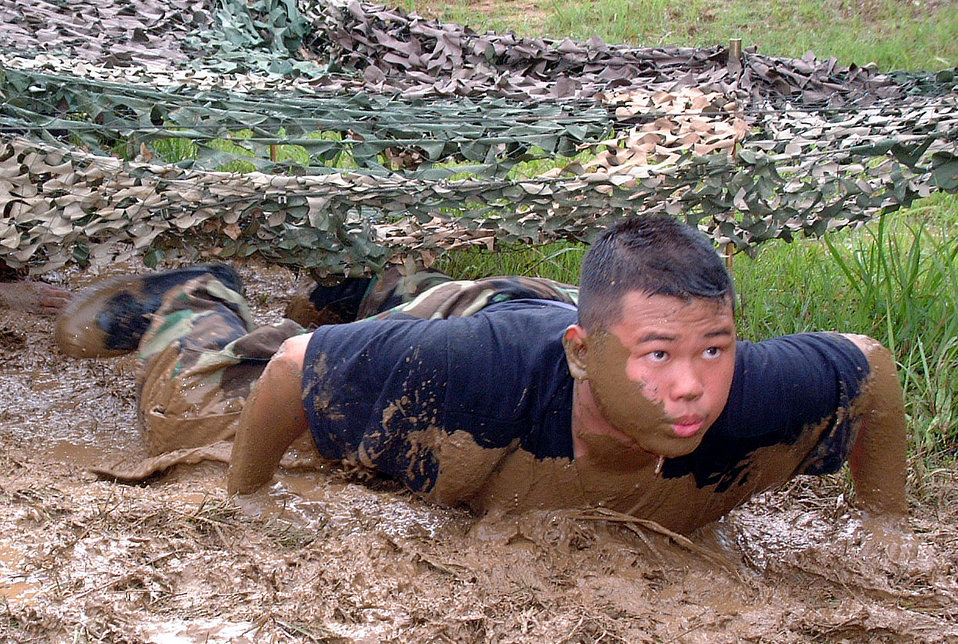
Mr. Mud

OKINAWA, Japan -- Junior ROTC Cadet Mike Arnado crawls under camouflage nets during a trip through the confidence course at the jungle-training center here June 19. Nearly 100 cadets from here and Korea crawled, jumped, pushed and reasoned their way through the mile-long course. Arnado is a student at Kadena High School at Kadena Air Base, Japan.